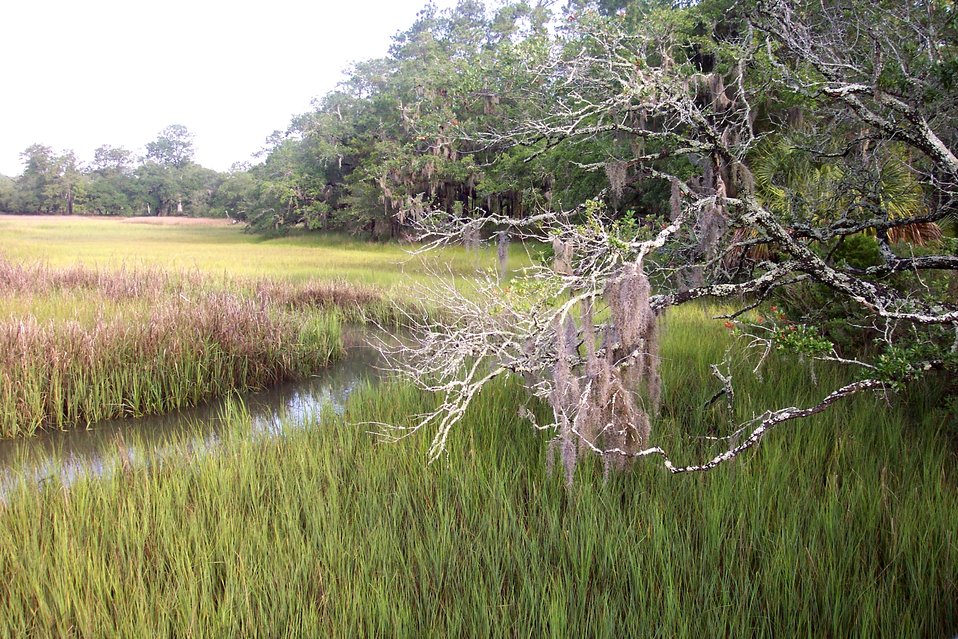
Salt water marsh, oaks and Spanish moss near the Wando River at Daniel Island.